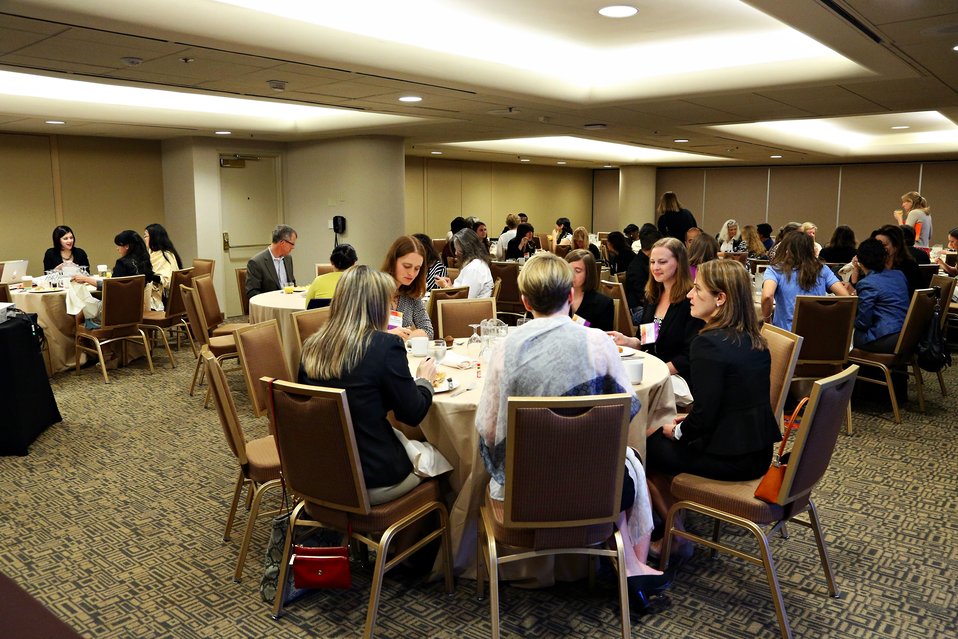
Women in Solar Breakfast 2

Full room at the Women in Solar Breakfast.